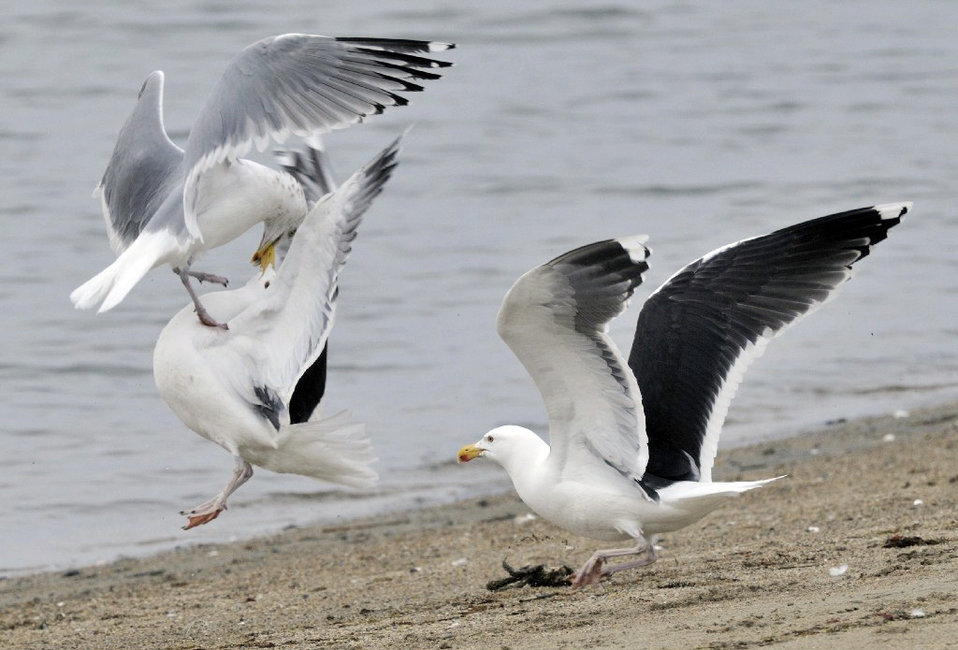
Photo of the Week - Gulls fighting over crab (RI)

Photo of the Week - 3/12/12

Great black-backed gulls battling a Herring gull for a crab at Oakland Beach in Warwick, RI.